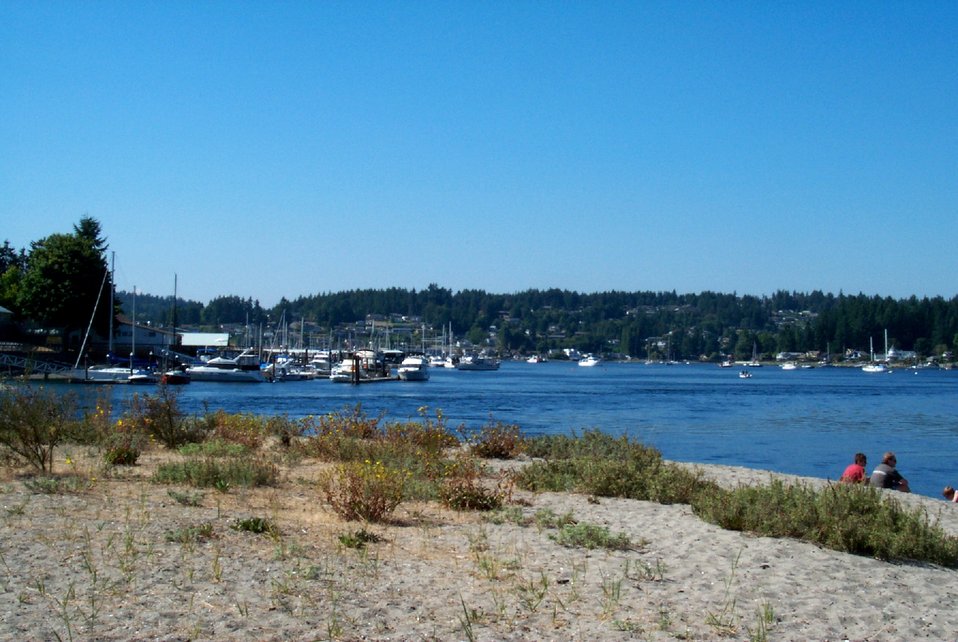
A view of the inside of Gig Harbor from the spit at the entrance to the harbor.